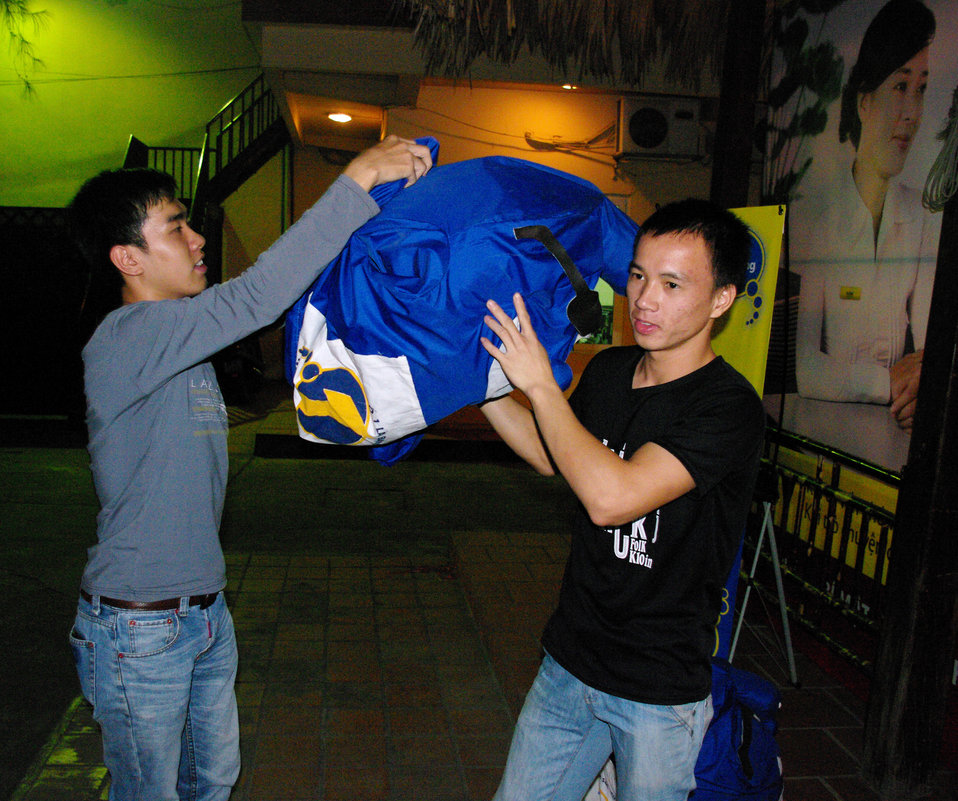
PEPFAR, U.S. Embassy Host Dengue Fever Concert in Hanoi